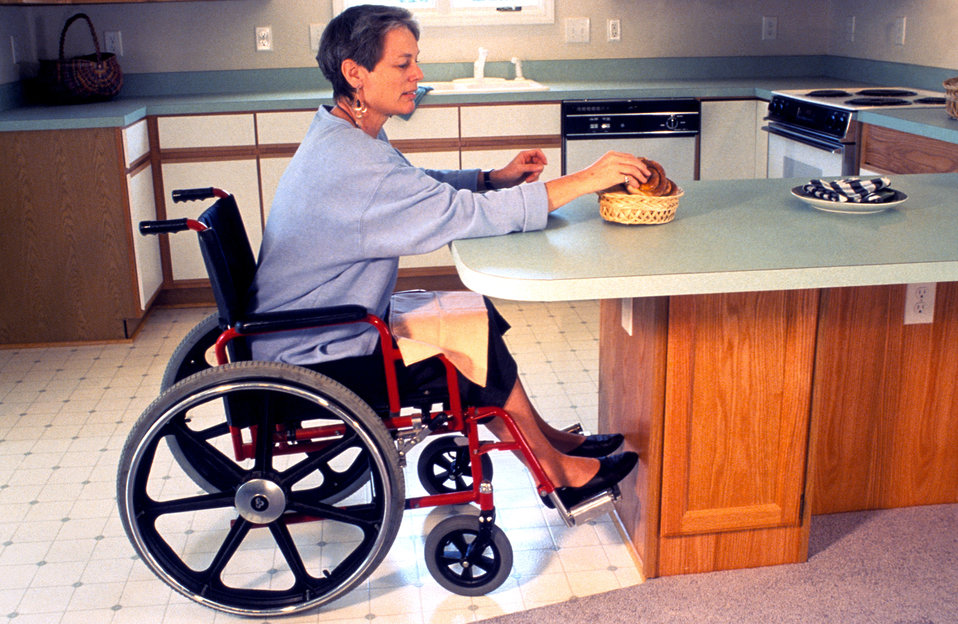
This 1994 image depicted a woman seated in her wheelchair inside a kitchen in which the cabinetry had been ergonomically-designed so as to accommodate the widest possible group of end users. These kitchen base cabinets easily converted into knee-spaces critical for people using wheelchairs, as well as those with stamina or balance limitations, who must sit while completing extended food-preparation activities. The woman in this image was getting ready to eat a honeybun while seated up close to the edge of a kitchen countertop that had been designed in order to be more accommodating, allowing a wheelchair-seated individual to pull close to the working surfaces, as seen in this example.